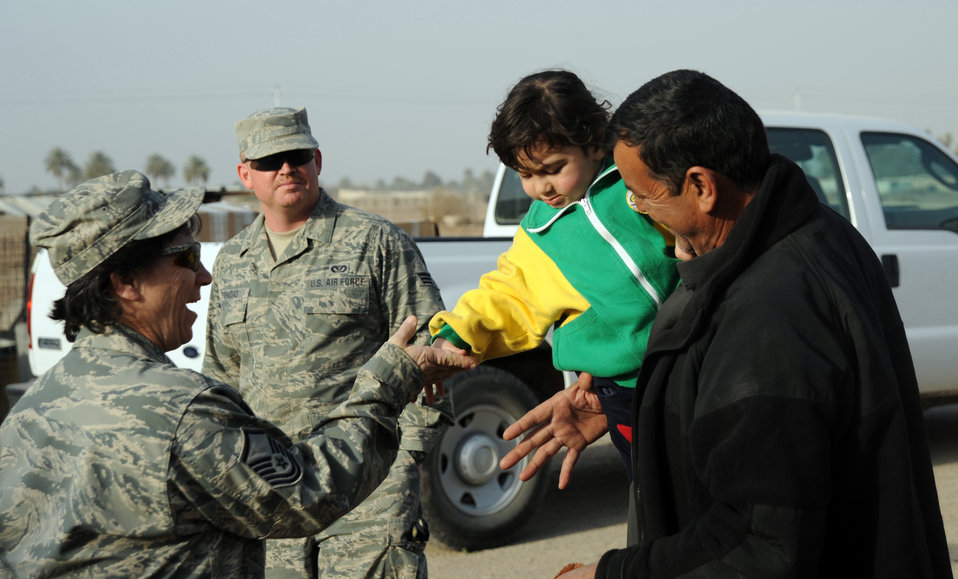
Servicemembers donate items to Iraqi neighbors

Master Sgt. Margaret Triboletti hands an Iraqi child a piece of candy Jan. 29, 2010, near Sather Air Base, Iraq, while volunteering with the Sather AB good neighbor program. Sergeant Triboletti is assigned to the , 447th Expeditionary Civil Engineer Squadron.